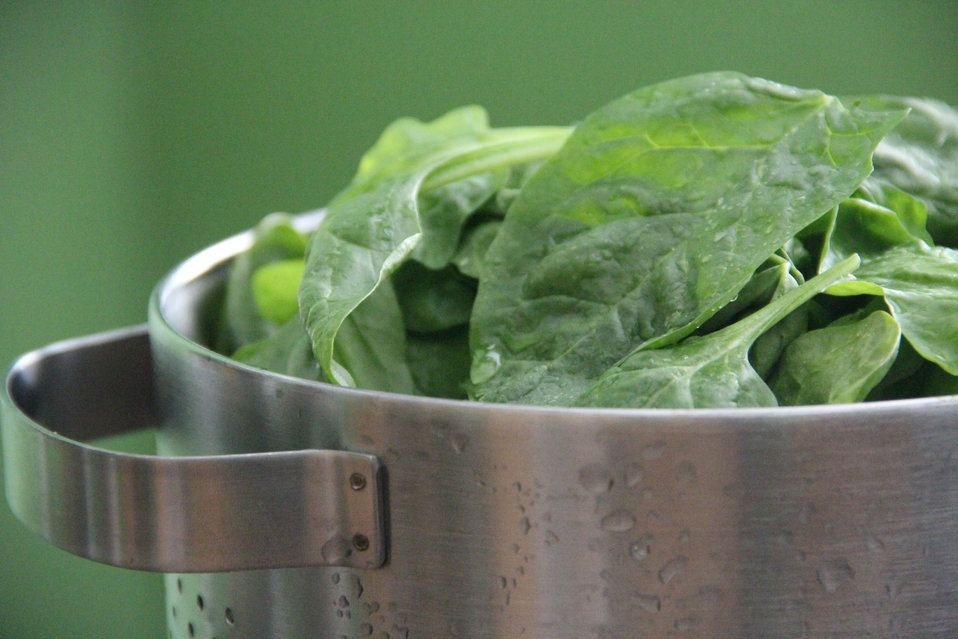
This image depicts a metal colander filled with freshly-washed spinach leaves, which were now ready to be eaten raw in a delicious salad, or cooked into a stir-fry dish.